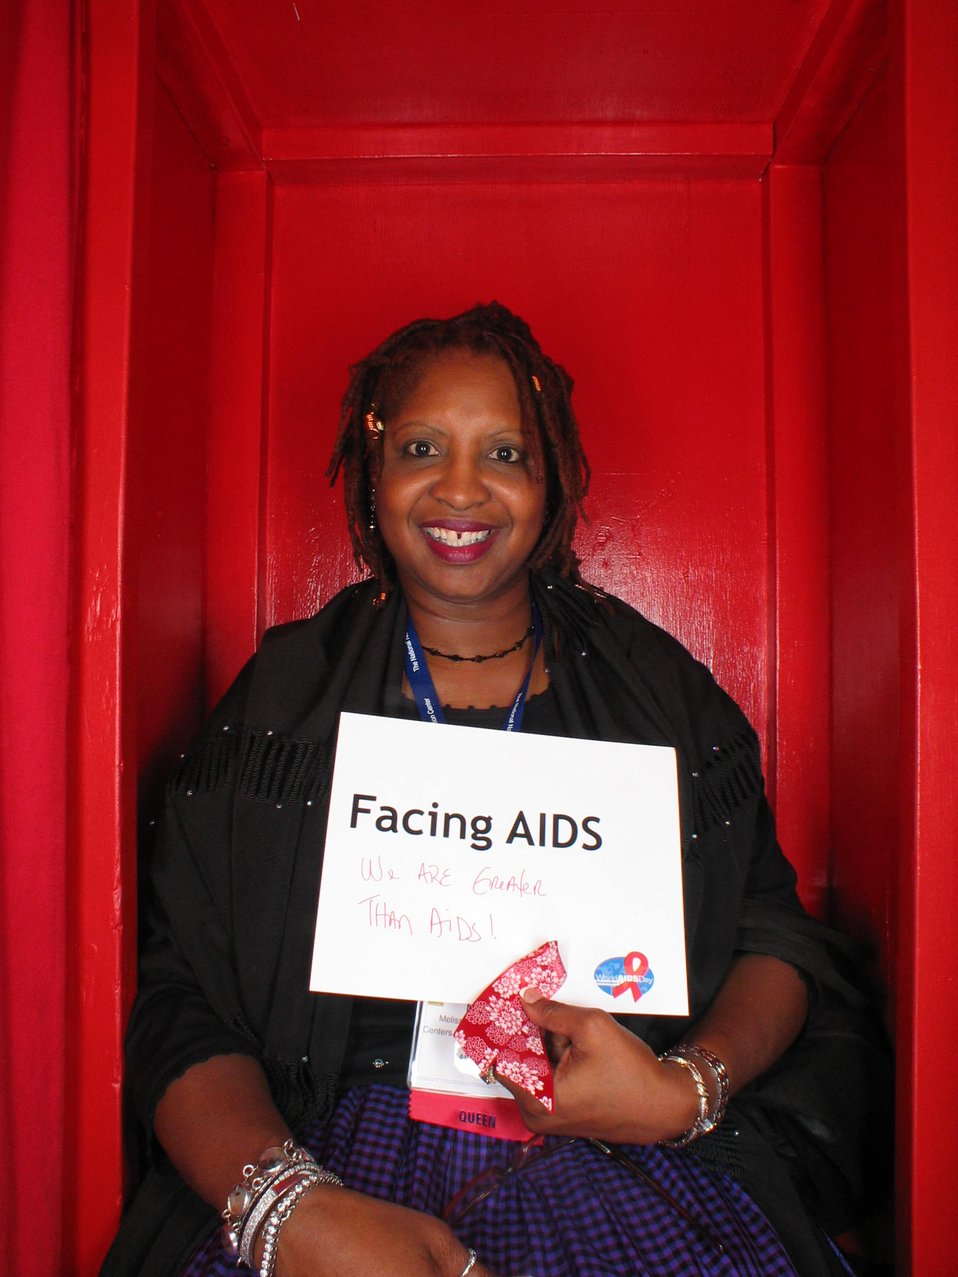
Facing AIDS we are greater than AIDS.